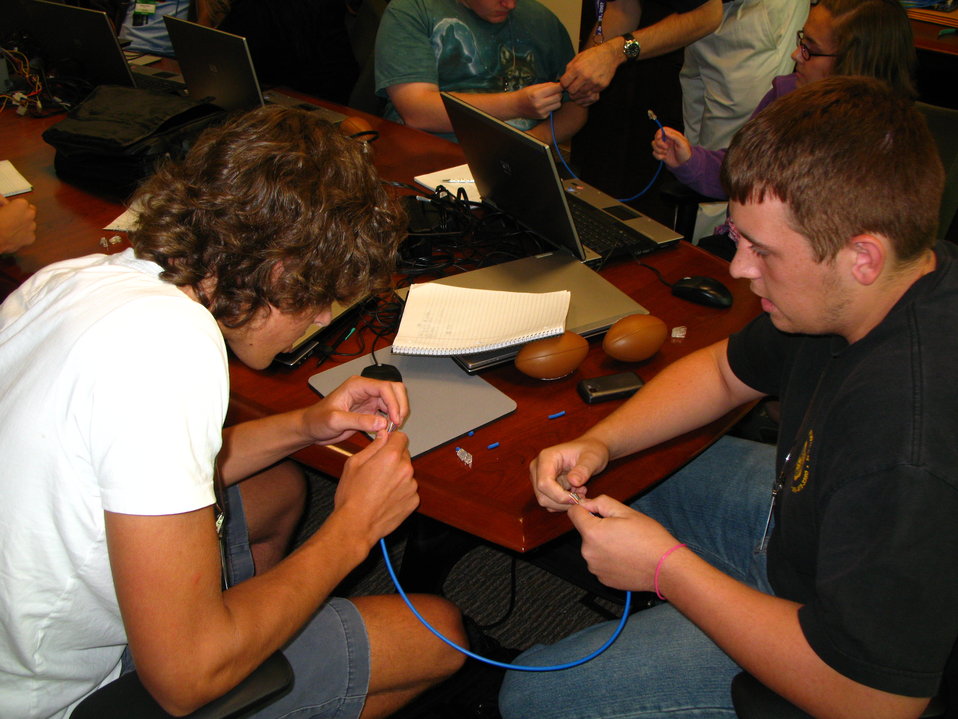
ARCSUPERS (17)